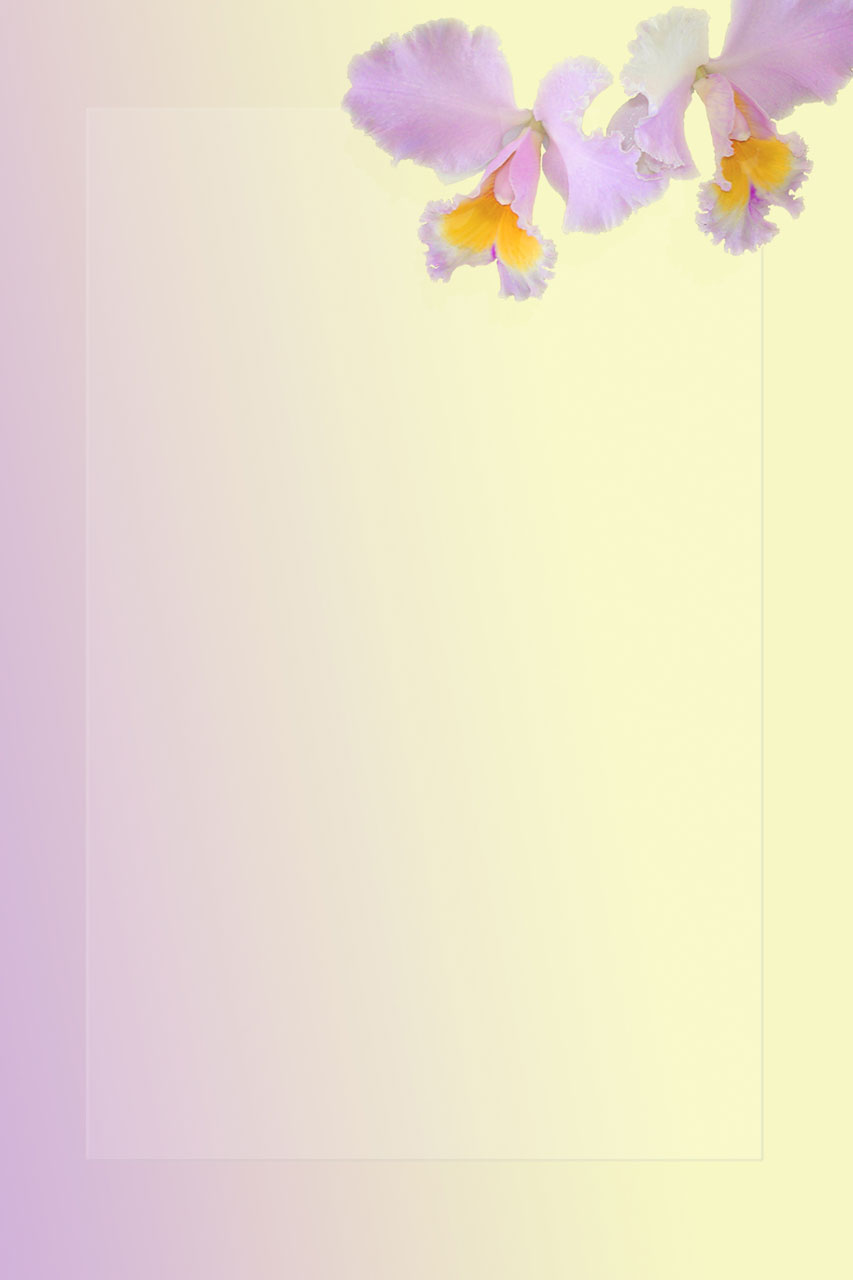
Orchid background

Letter, desktop or website background.